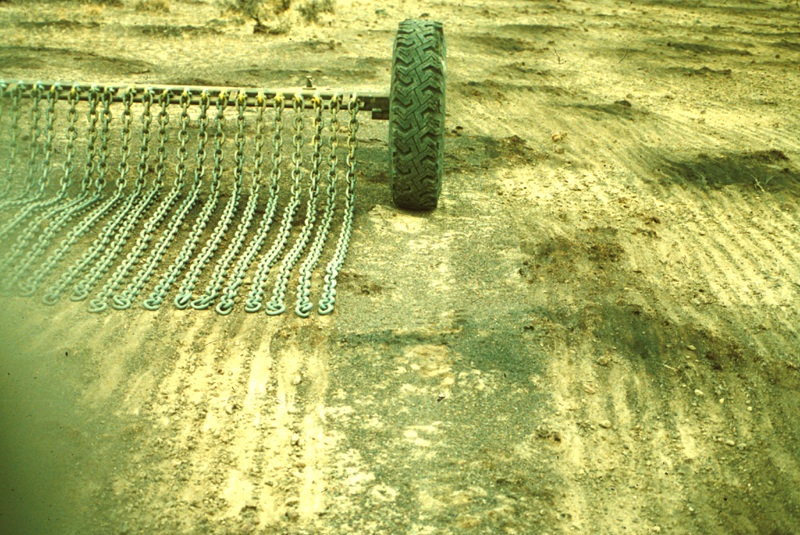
Disk Range Restoration Project Lower Snake River District